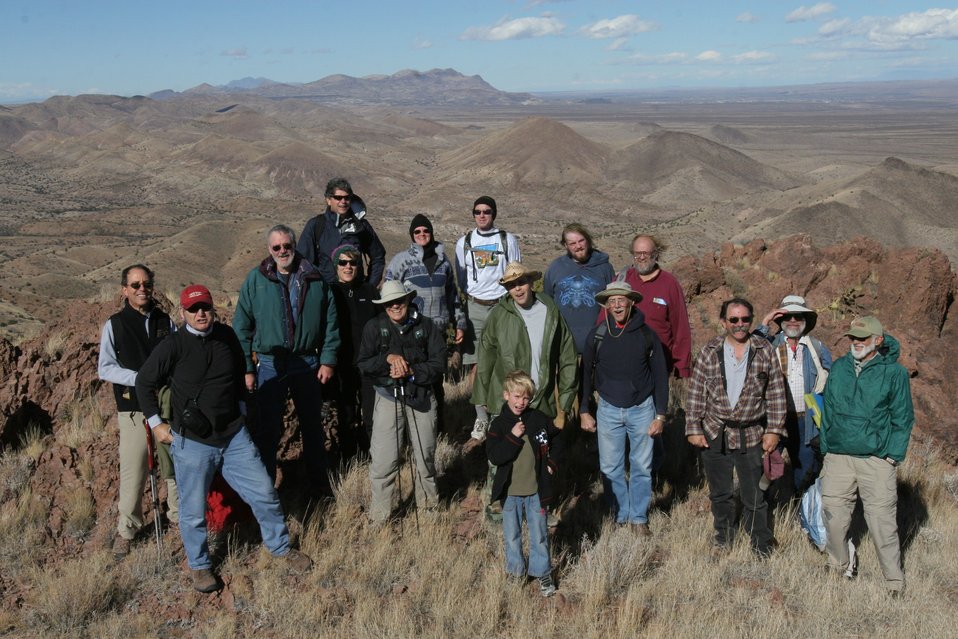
Hikers at summit of Chupadera Peak

Bosque del Apache National Wildlife Refuge, New Mexico.